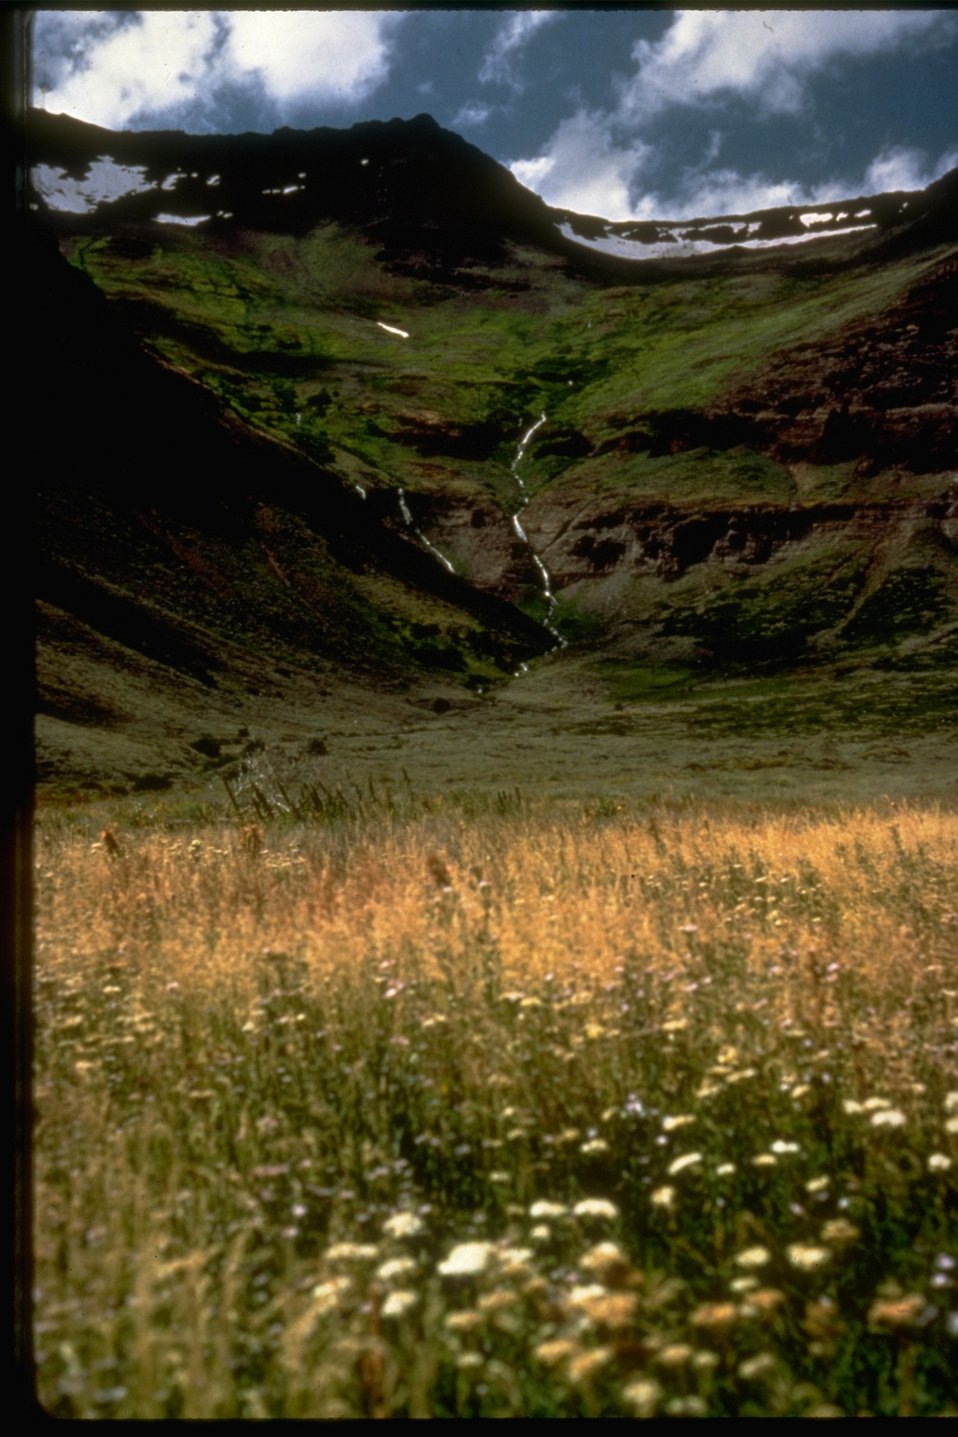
Mosquito Creek in the High Steens Wilderness Study Area. OR 2-85F